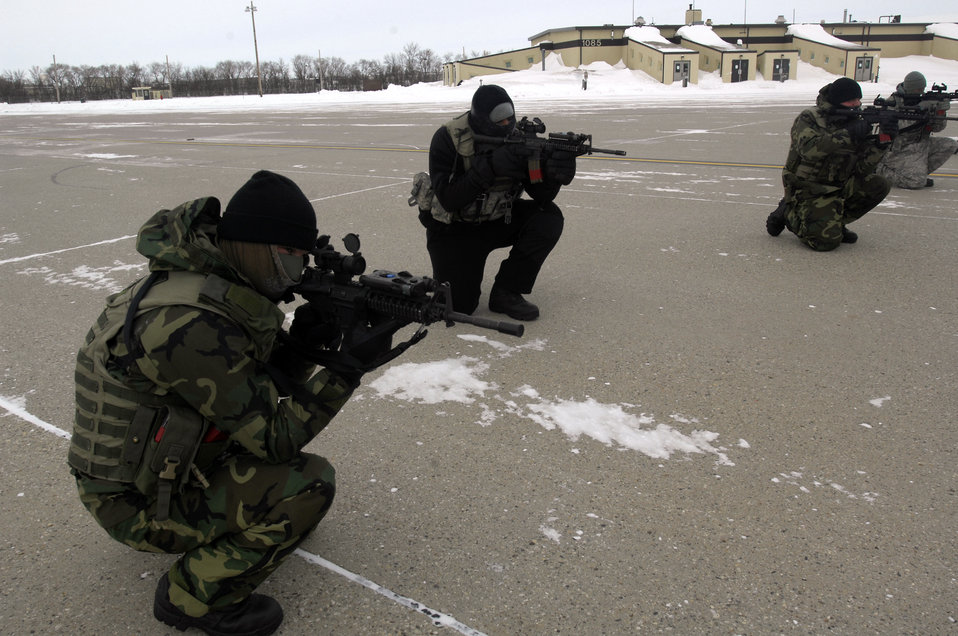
Blue Coach improves security forces Airmen tactics, training

Airmen from the 5th Security Forces Squadron endure the harsh cold during the Blue Coach Training Initiative at Minot Air Force Base, N.D., Jan 8. A Navy Sea, Air and Land team is helping to train 200 Minot security forces members on recapturing and combat tactics by April.